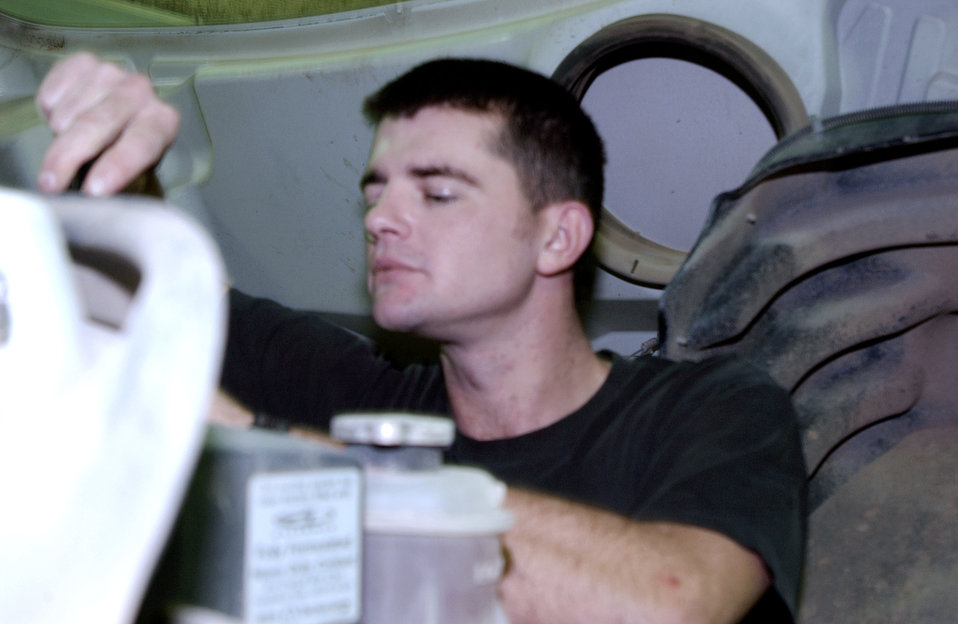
'Dirtboyz' keep Balad airfield operational

Staff Sgt. Ricky Johnson performs a function check on a sweeper Nov. 9 at Balad Air Base, Iraq. Sergeant Johnson is a 332nd Expeditionary Civil Engineer Squadron pavements and equipment craftsman deployed from Charleston Air Force Base, S.C.